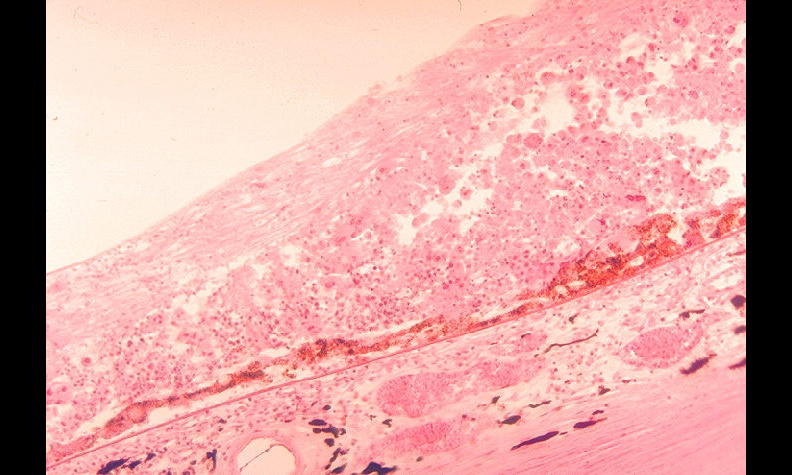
Histopathology of cytomegalovirus infection of eye in woman with lymphoma.